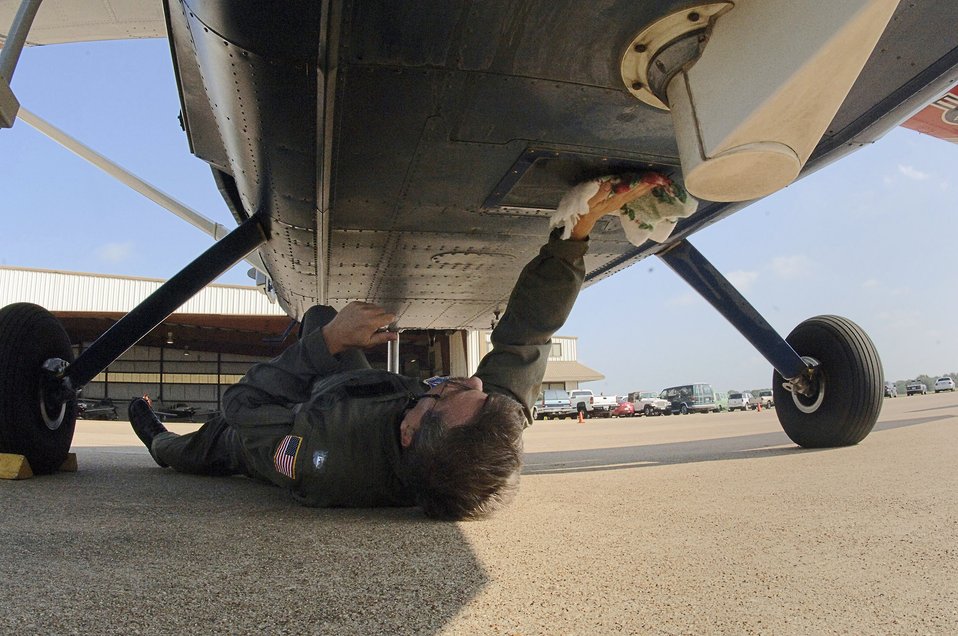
Civil Air Patrol responds

HOUSTON -- First Lt. G. Paul Roberts cleans the quartz glass portal of the airborne real-time cueing hyperspectral enhanced reconnaissance system aboard an Australian made Gippsland Aeronautics "Airvan" aircraft. His Civil Air Patrol mission here will be to detect oil spills and pollution in the affected region of Hurricane Rita.